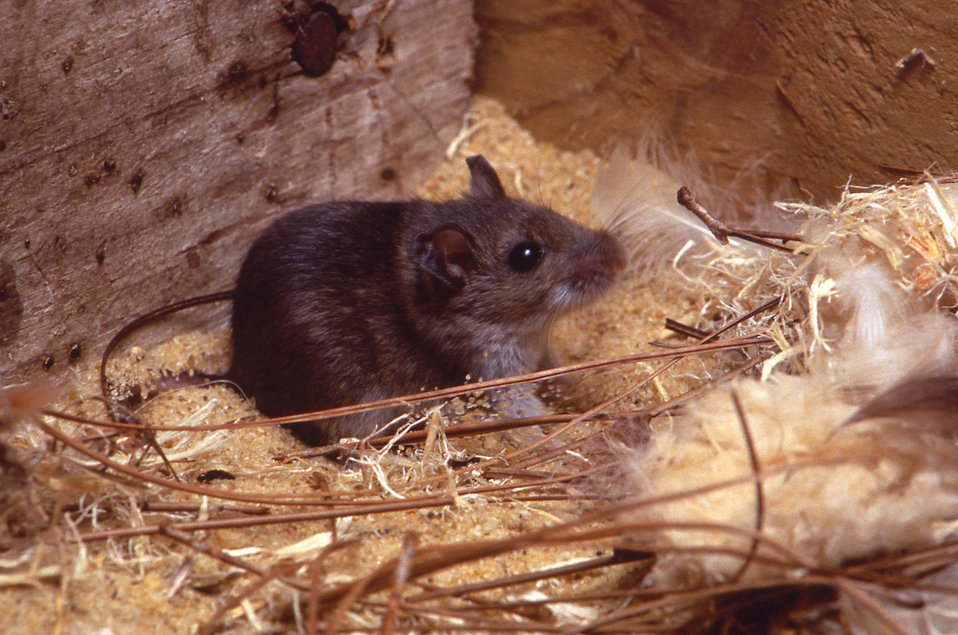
This image depicts a deer mouse, Peromyscus maniculatus which was crouched in a sawdust, pine needle, and bird feather habitat.